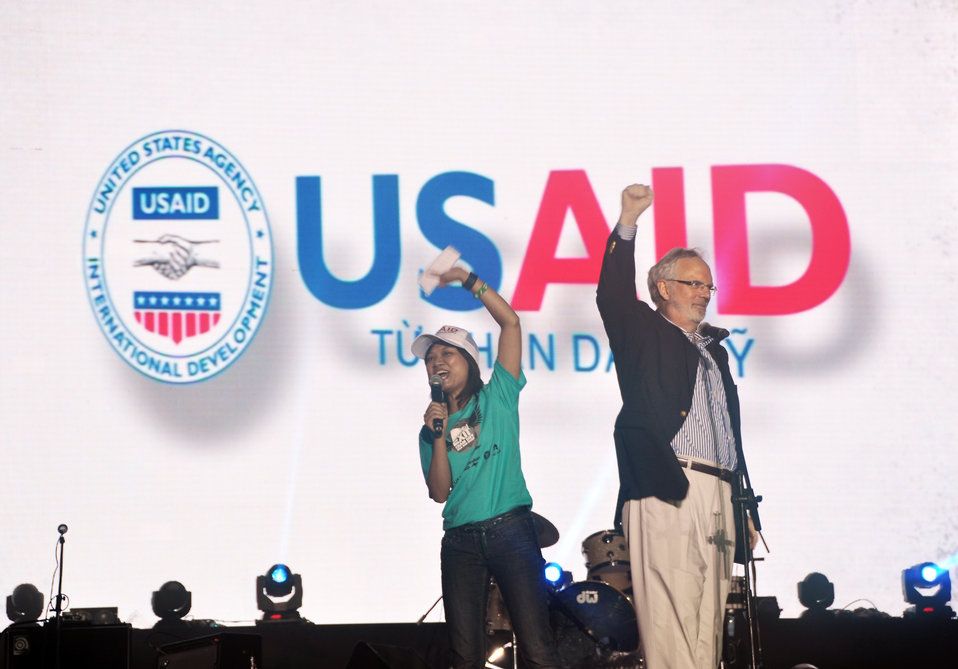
U.S. Ambassador David Shear belts out the message: Stop - human trafficking - NOW.

USAID supports MTV EXIT concert against human trafficking and exploitation